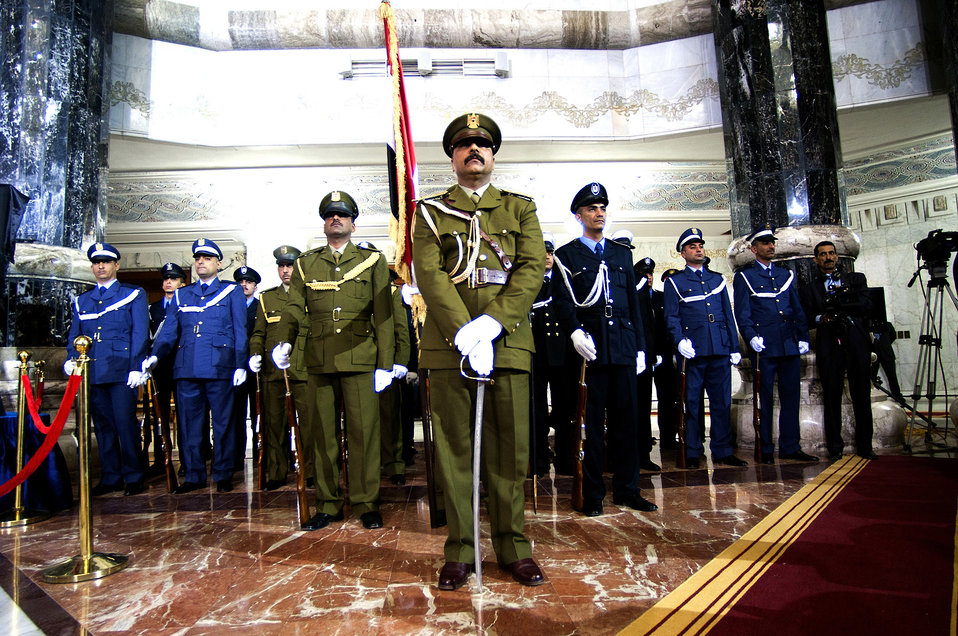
Biden, al-Maliki honor troops' sacrifices during Day of Commitment Ceremony

Iraqi military and police personnel stand in formation during the Government of Iraq Day of Commitment Ceremony at the Al Faw Palace on Victory Base Complex, Iraq, Dec. 1, 2011. The ceremony commemorated the sacrifices and accomplishments of U.S. and Iraqi service members.